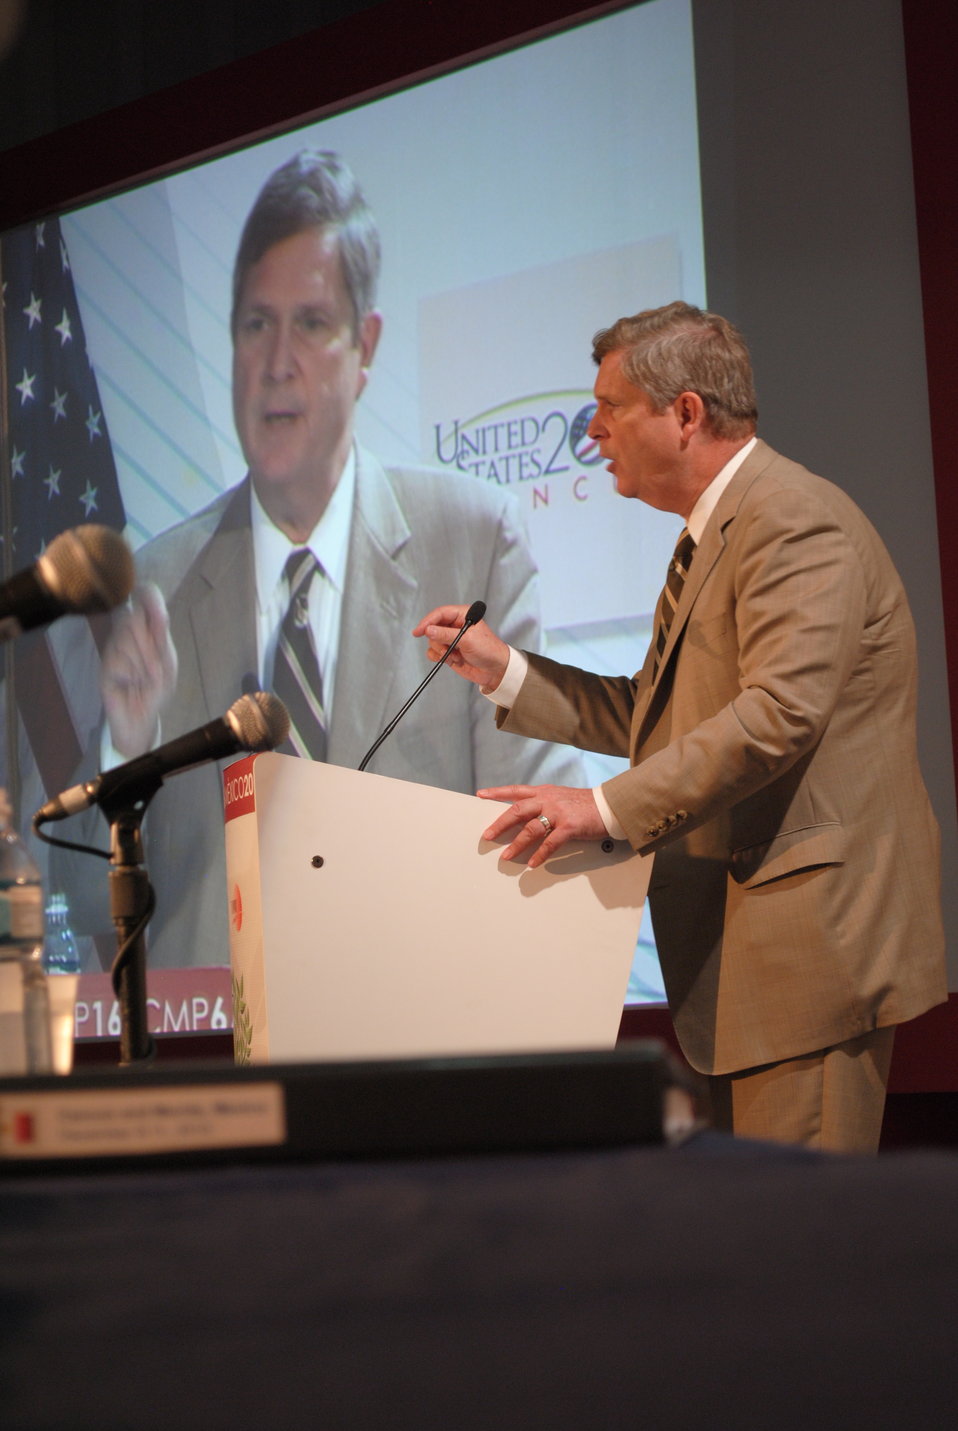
Secretary Vilsack Describes How the USDA Is Addressing Climate Change

U.S. Secretary of Agriculture Tom Vilsack describes how the U.S. Department of Agriculture is taking actions to meet the challenge of climate change at the U.S. Center at COP-16 in Cancun, Mexico, on December 9, 2010.